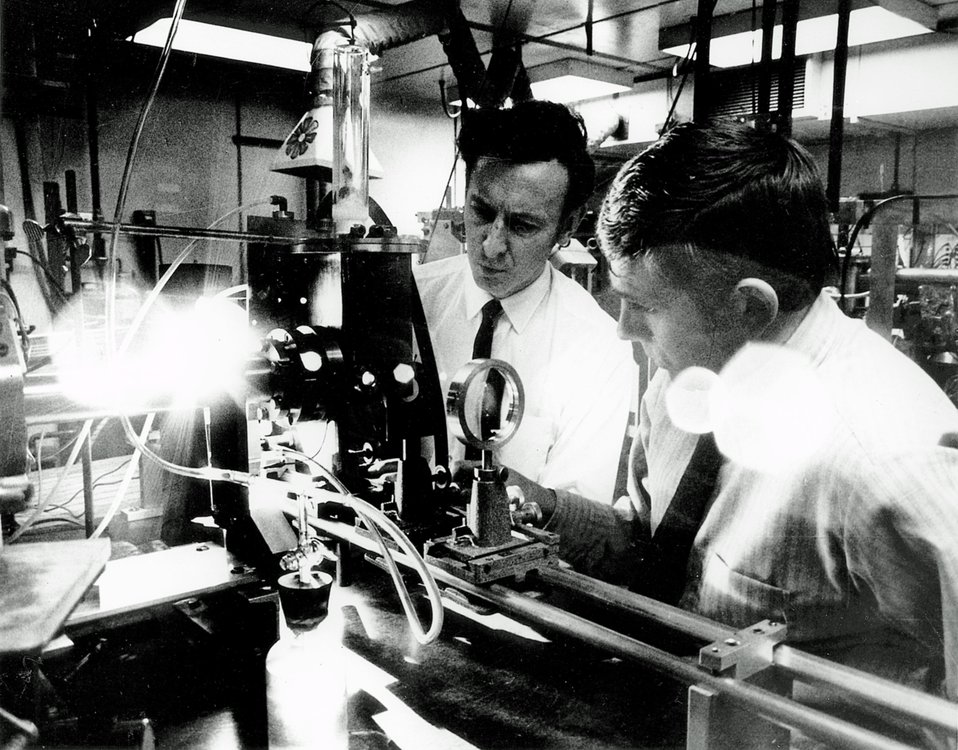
Argonne scientists adjust the components of a spectrometer used in pulsed radiolysis research.
c.1970